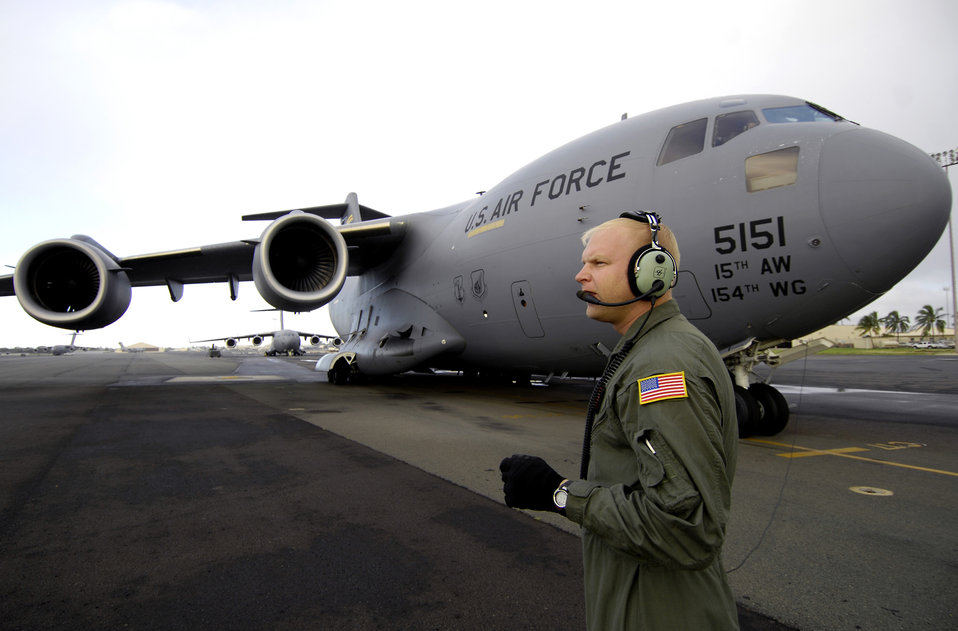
How low can they go

Staff Sgt. John Eller conducts pre-flights check on his C-17 Globemaster III Jan. 3 prior to taking off from Hickam Air Force Base, Hawaii for a local area training mission. Sgt. Eller is a loadmaster from the 535th Airlift Squadron.